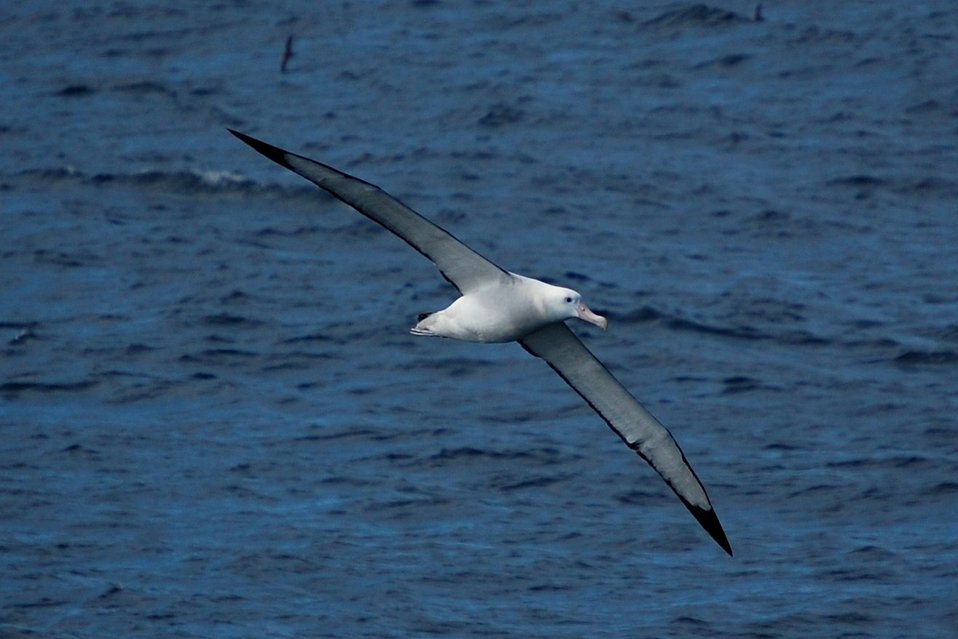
Wandering albatross.